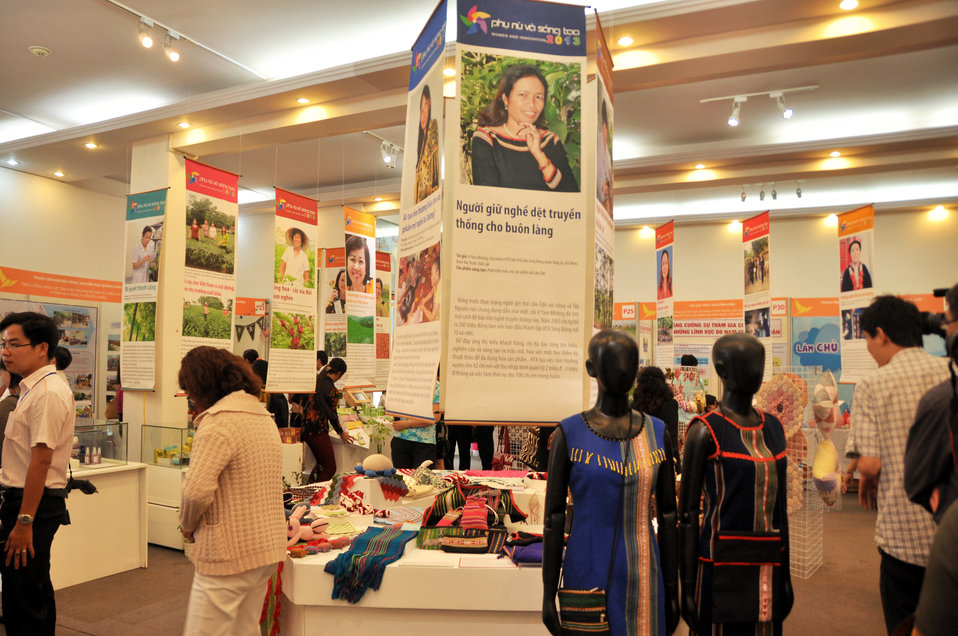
Vietnam Women Innovation Day 2013

Hanoi, October 1, 2013.